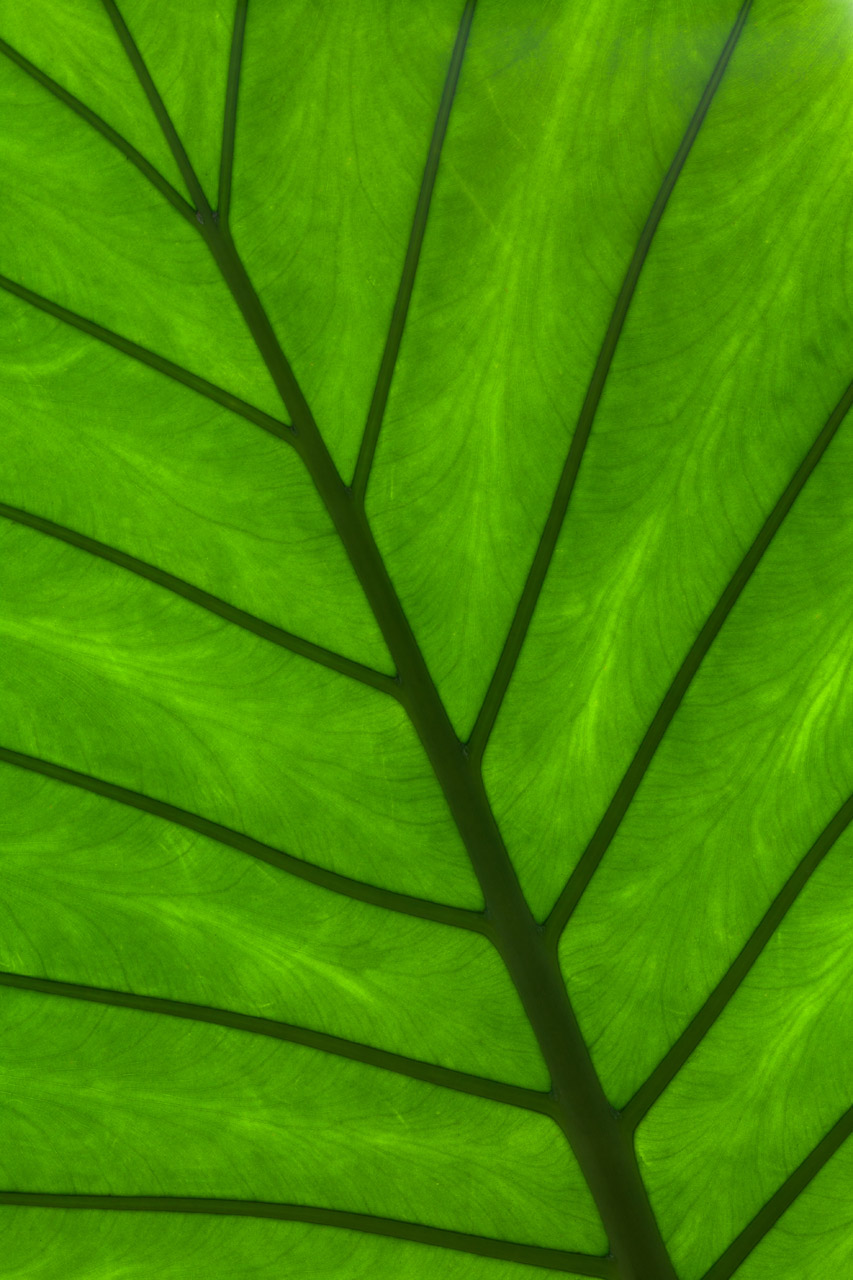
Green leaf detail

Green leaf texture photo.